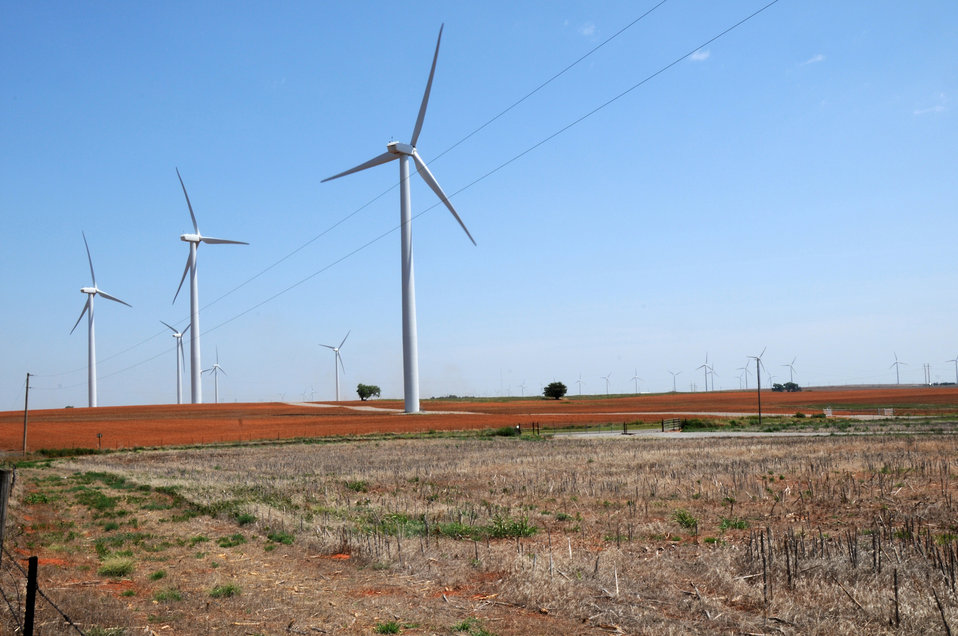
A tractor tills the soil among wind turbines in Oklahoma on August 13, 2009. A wind farm is a group of wind turbines in the same location used to produce electric power. A large wind farm may consist of several hundred individual wind turbines, and cover an extended area of hundreds of square miles, but the land between the turbines may be used for agricultural or other purposes.